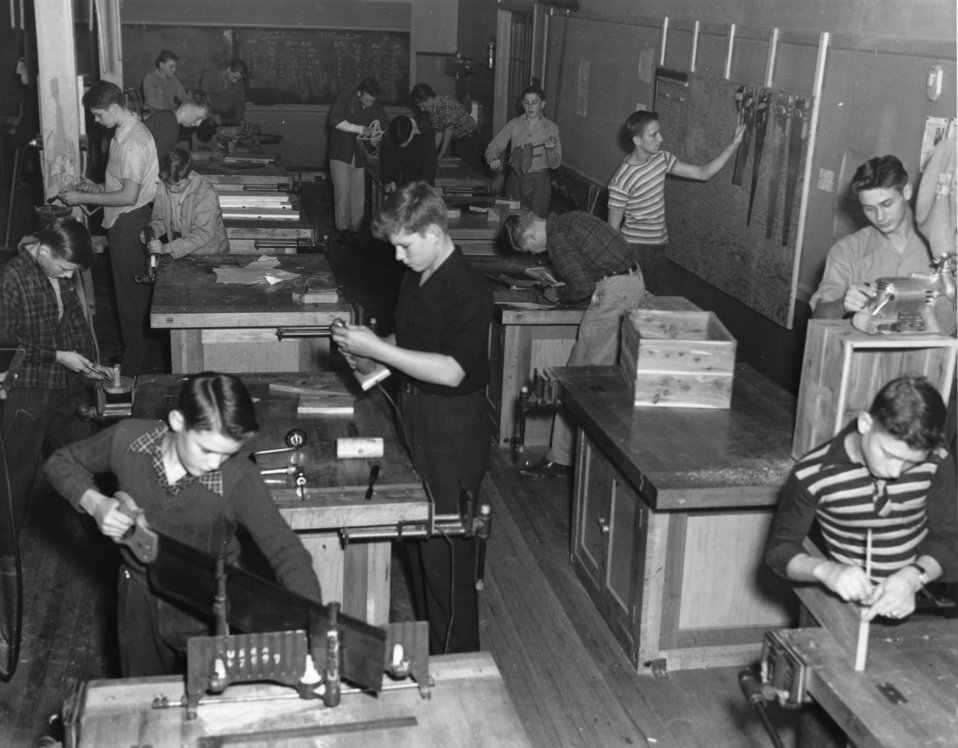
Schools at Oak Ridge